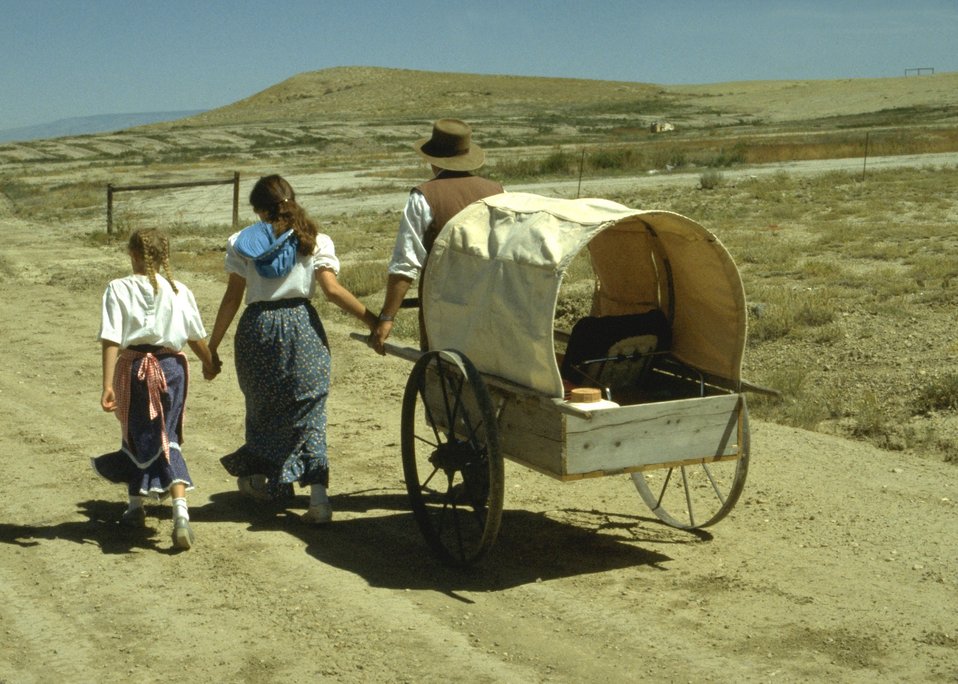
Hand cart re-enactment.